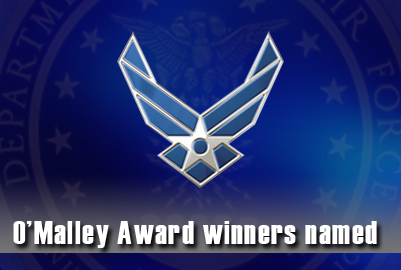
Officials announce O'Malley Award winners

Two Airmen from Joint Base Elmendorf-Richardson, Alaska, are the recipients of the 2010 General and Mrs. Jerome F. O'Malley Award.